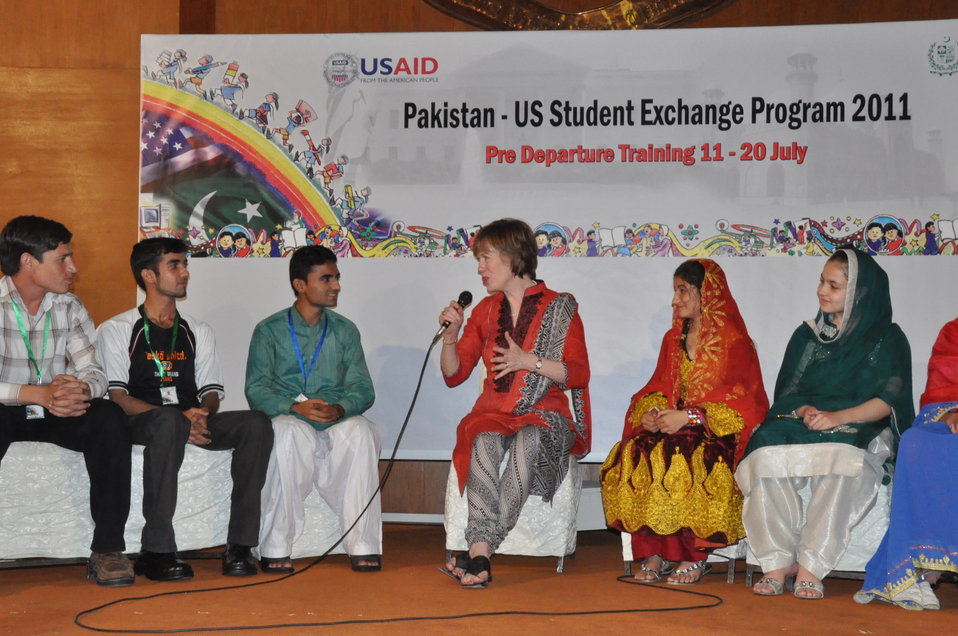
Pakistan-U.S. Student Exchange Program 2011

July 20, 2011: Dr. Marilyn Wyatt, Wife of U.S. Ambassador Cameron Munter discussed with a group of 43 students from all over the country the similarities and differences between the Pakistani and American cultures.

“Our two countries are literally half way across the world from each other,” said Dr. Wyatt during the discussion. “We have very different cultures, languages, and even food. However, we also are very similar: we love our countries, our families, and we are all working to make this world a better place.”

The 43 boys and girls from USAID-supported schools in Balochistan, FATA, and Sindh were participating in a ten-day training workshop organized by the USAID ED-LINKS program at the Allama Iqbal Open University Campus in Islamabad. During this program, 15 to 21 year old students explored cultural commonalities between Pakistan and American culture and values, such as folk music, clothing, food, and history. The program included visits to museums and other cultural sites around Islamabad, as well as a variety of research projects. Students prepared skits based on their learning.